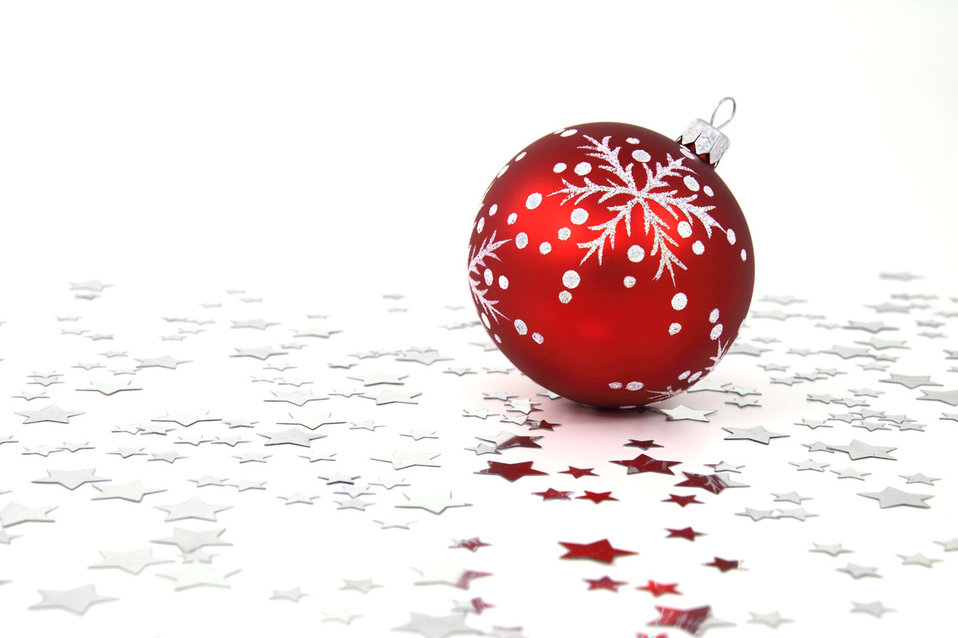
Christmas bauble

Red christmas bauble with silver stars on the floor.